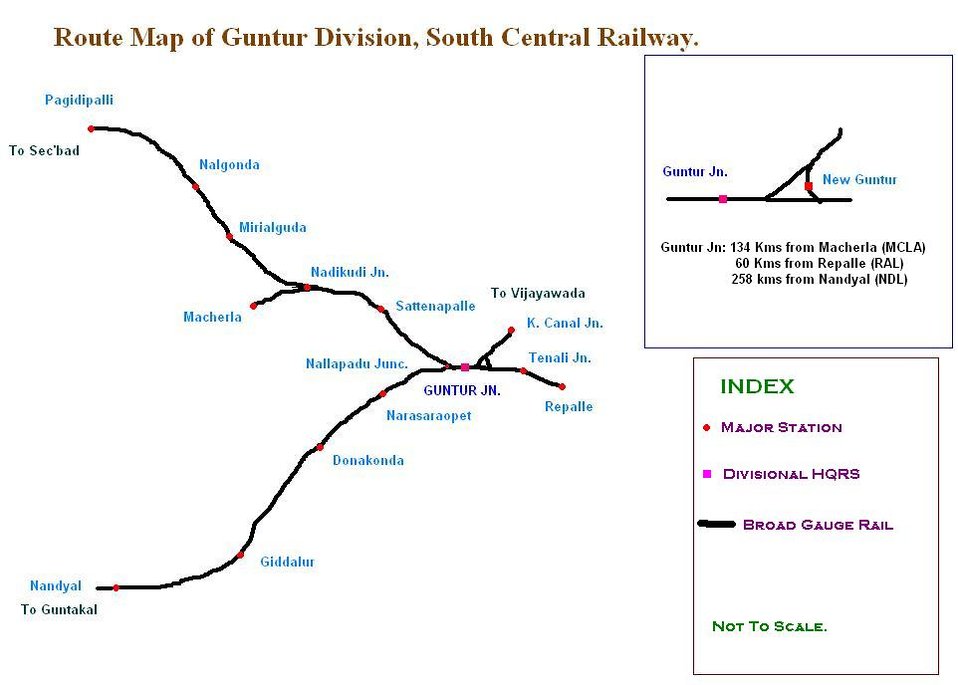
Own work and release it for public use.